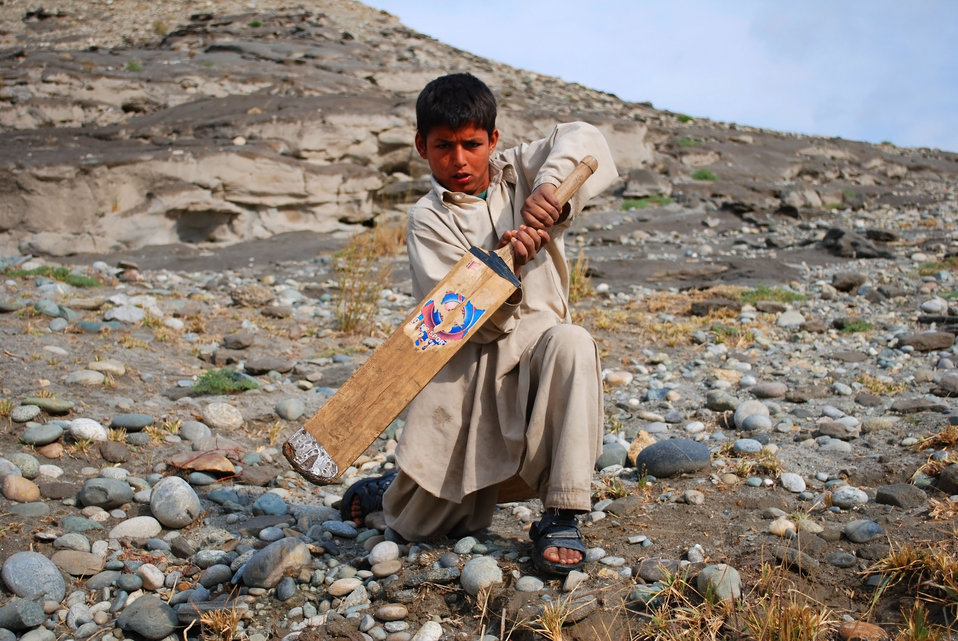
'On the Road' in Nangarhar Province